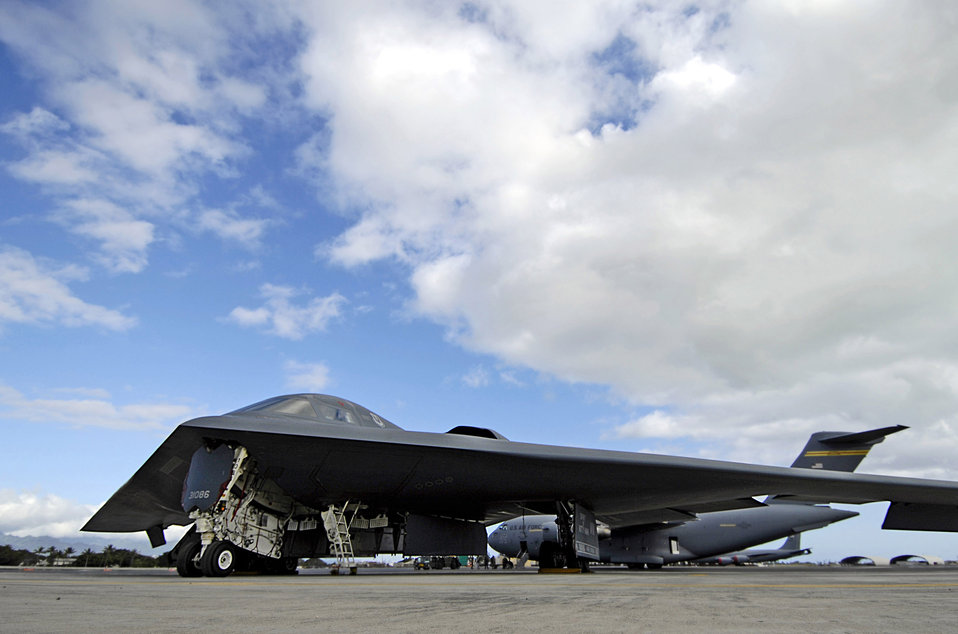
Showing Spirit

A B-2 Spirit stealth bomber is parked on the ramp Feb. 12 at Hickam Air Force Base, Hawaii. The bomber is currently deployed to Andersen Air Force Base, Guam, as part of the U.S. Pacific Command’s continuous bomber presence. The aircraft and approximately 280 personnel are from Whiteman Air Force Base, Mo.